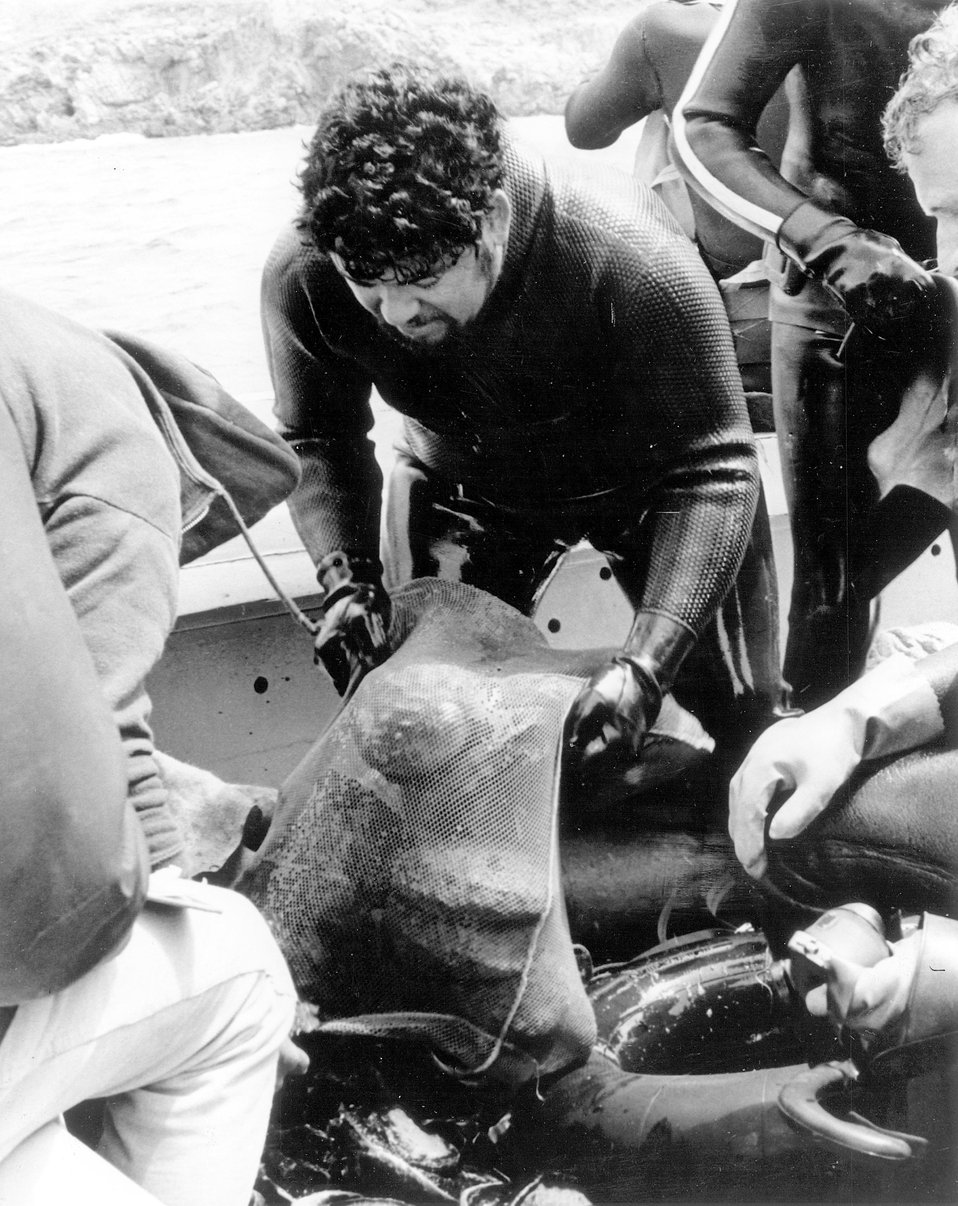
More than 14,000 abalones have been removed from the site of a breakwater for Pacific Gas & Electric Company's (PG&E's) nuclear power plant under construction near Diablo Canyon in San Luis Obispo County, California. Circa 1970.